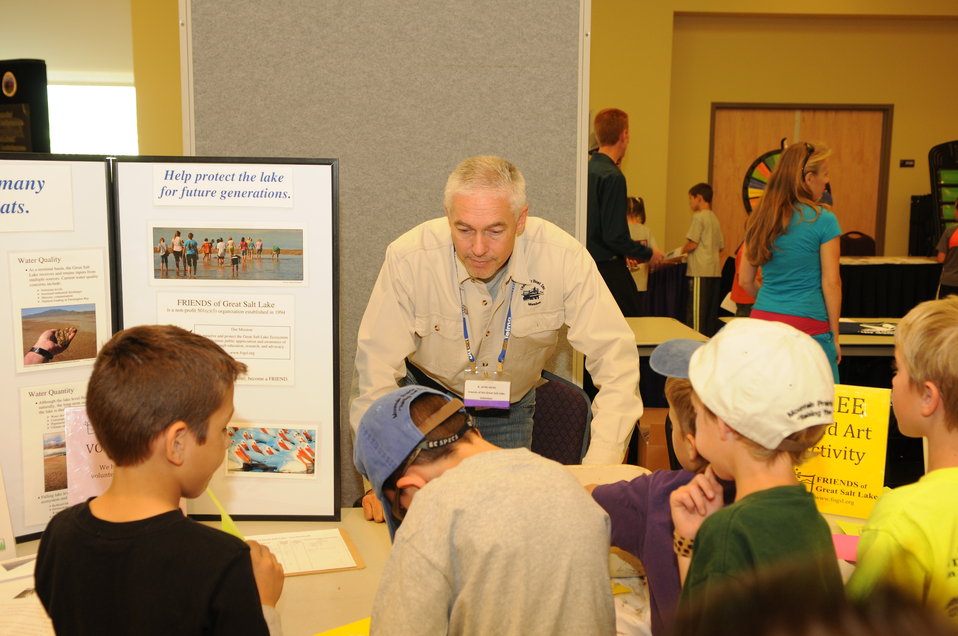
Youth Outreach

The U.S. Fish & Wildlife Service sponsored the 2012 Federal Duck Stamp Art Contest September 28 and 29 in Ogden, Utah, at Weber State University. A panel of five judges was responsible for choosing the art work used to design the 2013-2014 Migratory Bird Hunting and Conservation Stamp.